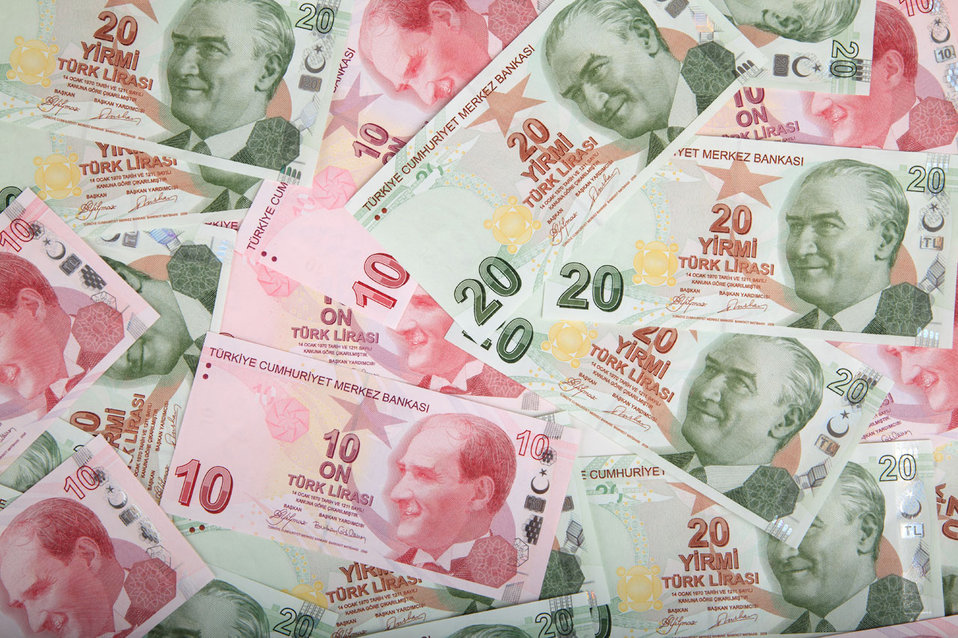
Turkish money

Turkish lira banknotes background wallpaper.